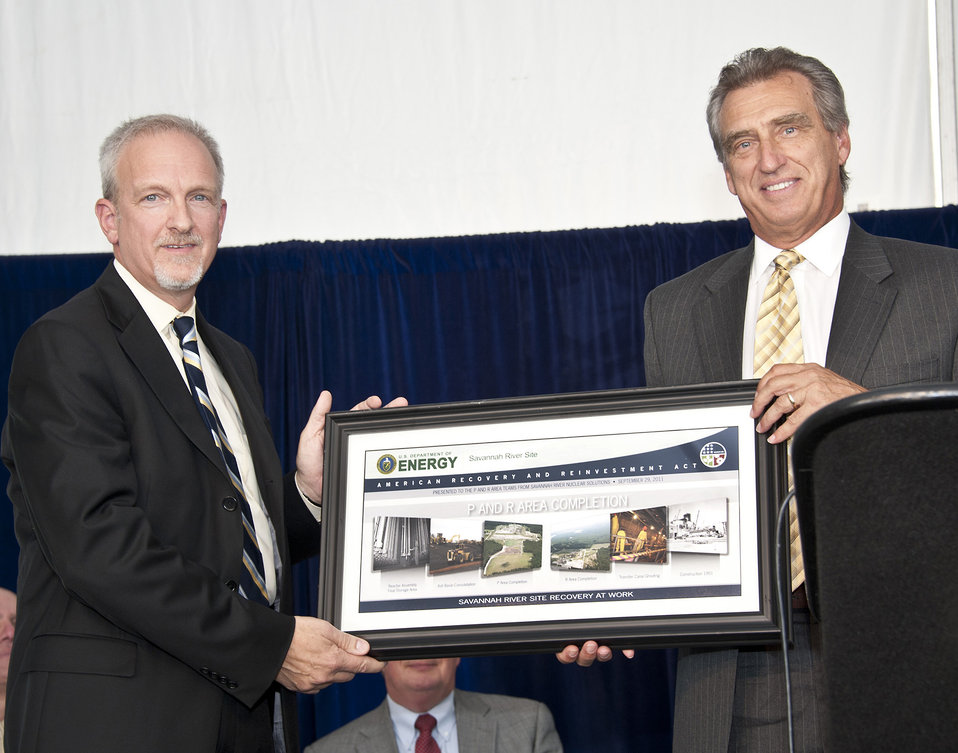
P and R Area Completion

Savannah River Nuclear Solutions President and CEO Garry Flowers, right, presents EM Acting Assistant Secretary David Huizenga with a memento from the Sept. 29, 2011 event marking the P and R Area completions.